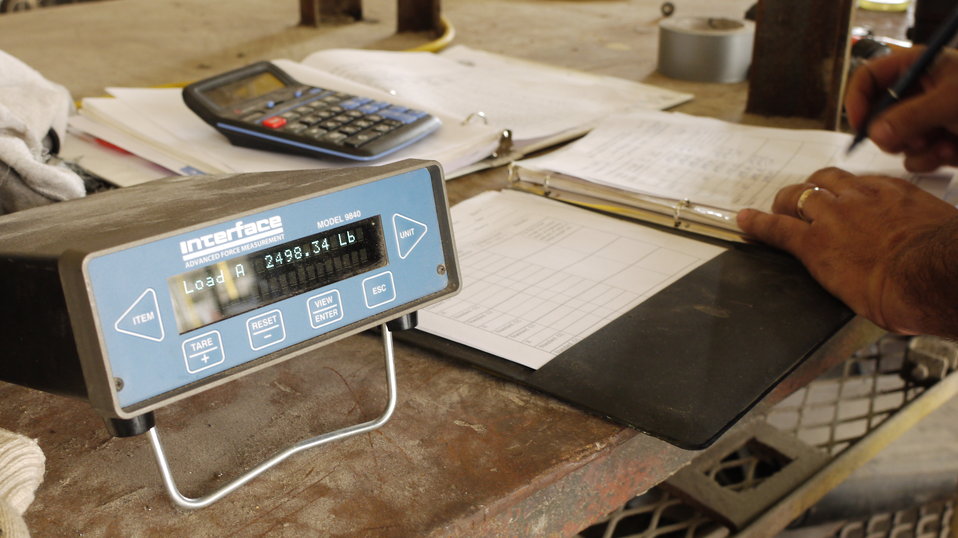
This is an Interface 9840 weight indicator used in calibration of elevator weights at a grain elevator in Myrtle Grove, LA on Aug. 6, 2013. The U.S. Department of Agriculture’s (USDA) Grain Inspection, Packers, and Stockyard Administration (GIPSA) provides official testing of Automatic Bulk Weighing (Hopper) scales used in official certification of grain weight.